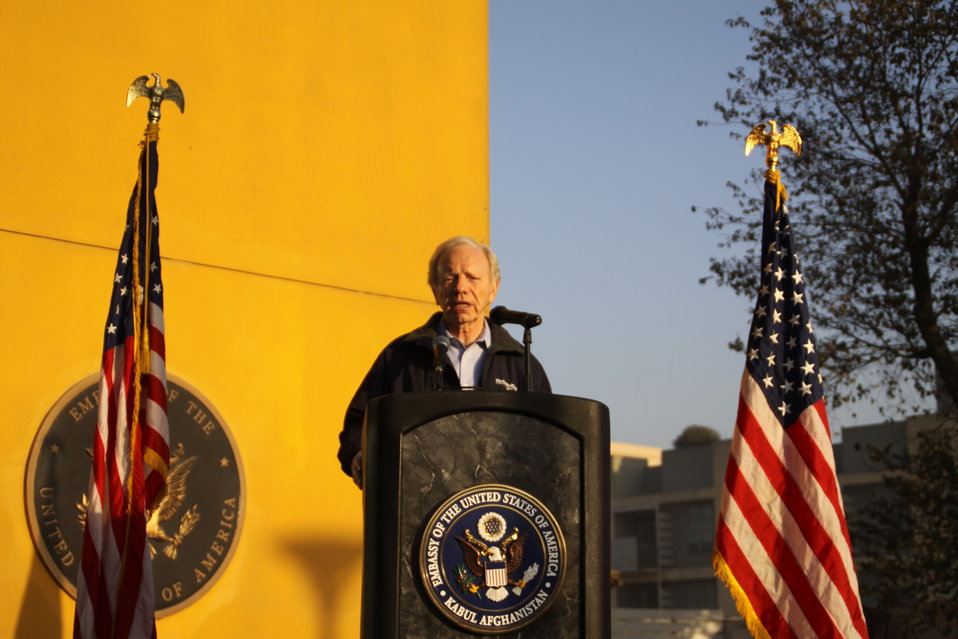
Senator Lieberman